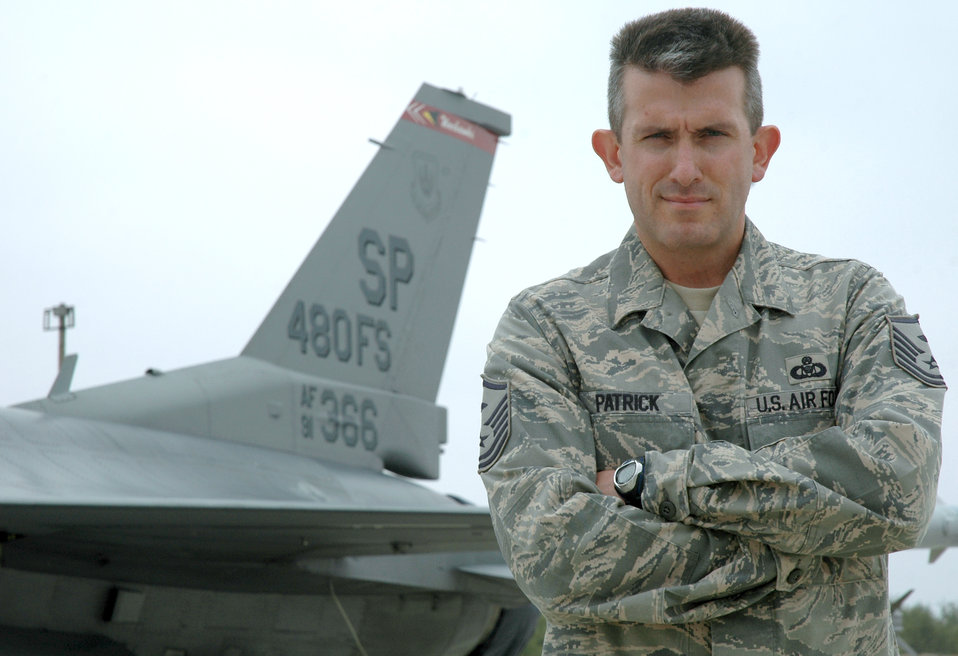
First sergeant comes full circle

Master Sgt Michael Patrick stands in front of an F-16 Fighting Falcon bearing his squadron's tail flash Oct. 13, 2010. Sergeant Patrick is the 480th Fighter Squadron first sergeant. He returned to the 480th FS after nearly 20 years to serve as the first sergeant for the three-week combined exercise that gave both U.S. and Bulgarian airmen the opportunity to train together and strengthen relationships.